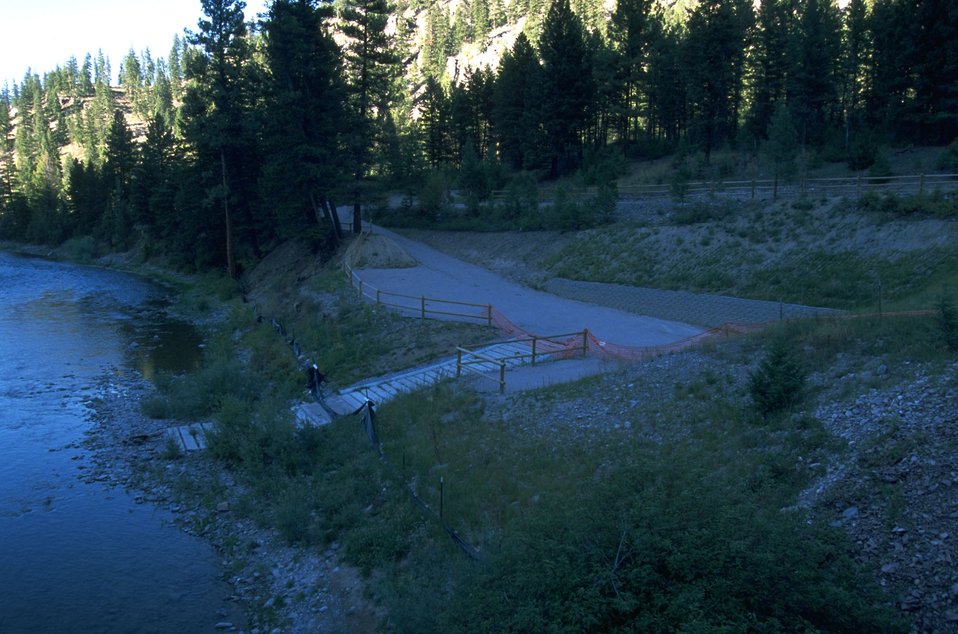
Whitaker Bridge and boat launch on Blackfoot River